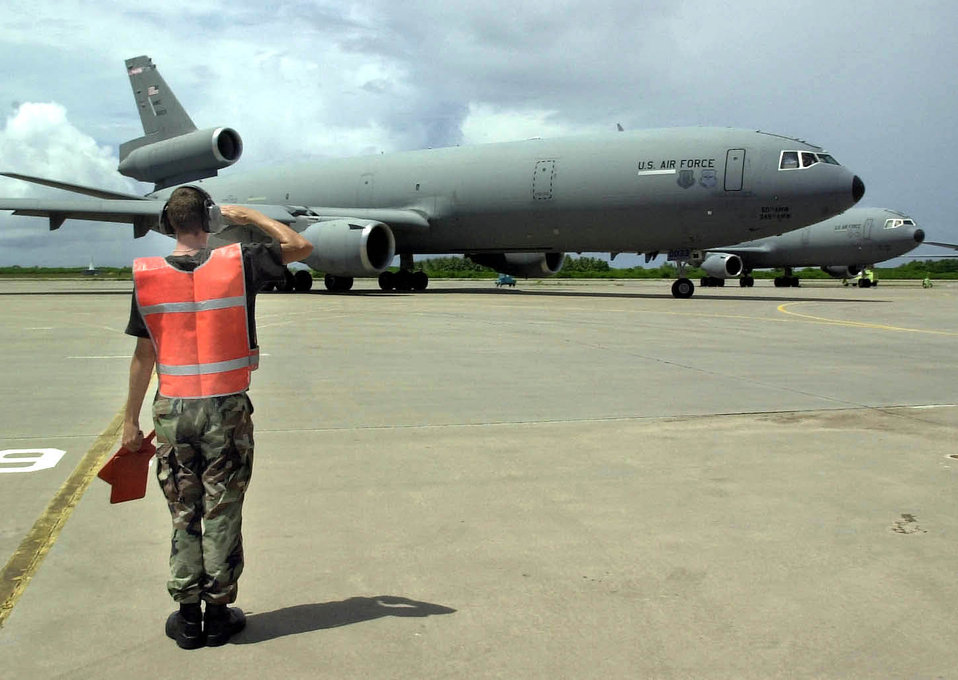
Good journey

OPERATION ENDURING FREEDOM -- An Air Force crew chief from the 28th Air Expeditionary Wing salutes a KC-10 Extender as it departs for a mission in support of Operation Enduring Freedom. KC-10s have been refueling B-2A Spirit, B-1B Lancer and B-52H Stratofortress aircraft since the beginning of the operation.